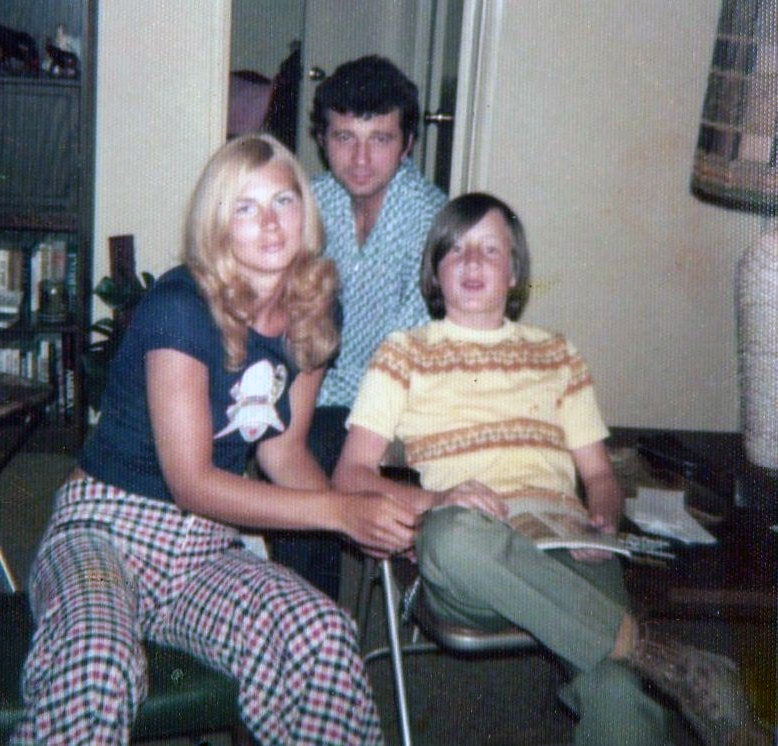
group of people wearing 1970s fashion. 1974.